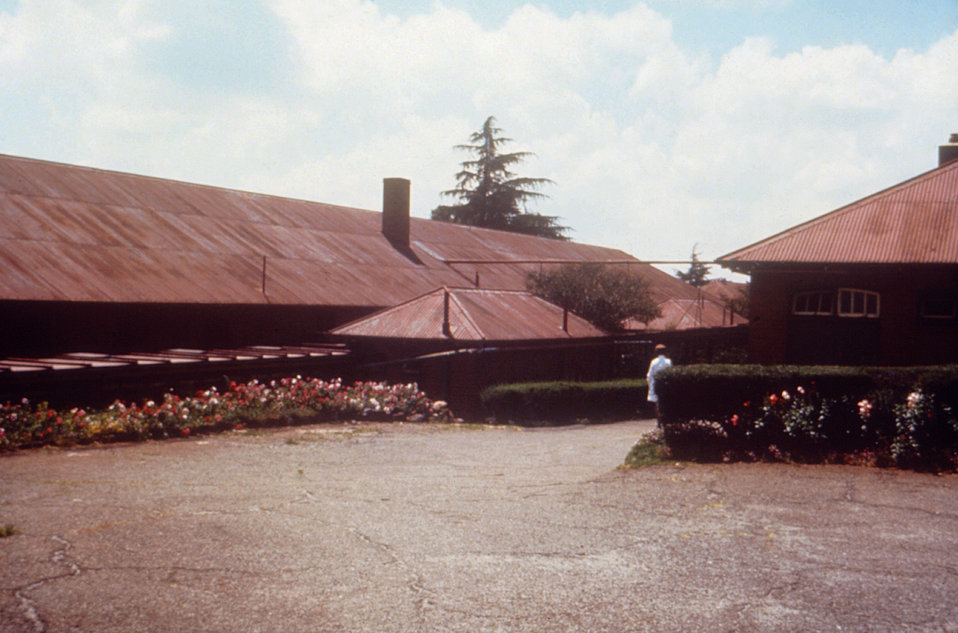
This is an Infectious Disease Hospital associated with the Univ. of Witwatersrand in Johannesburg, South Africa.